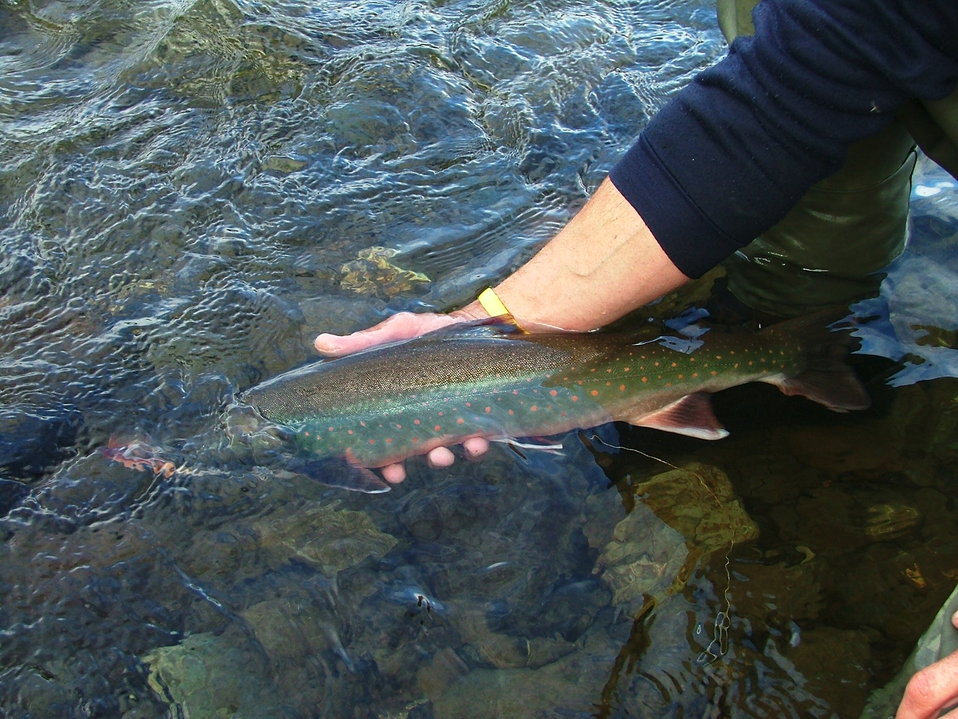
Dolly Varden char being released